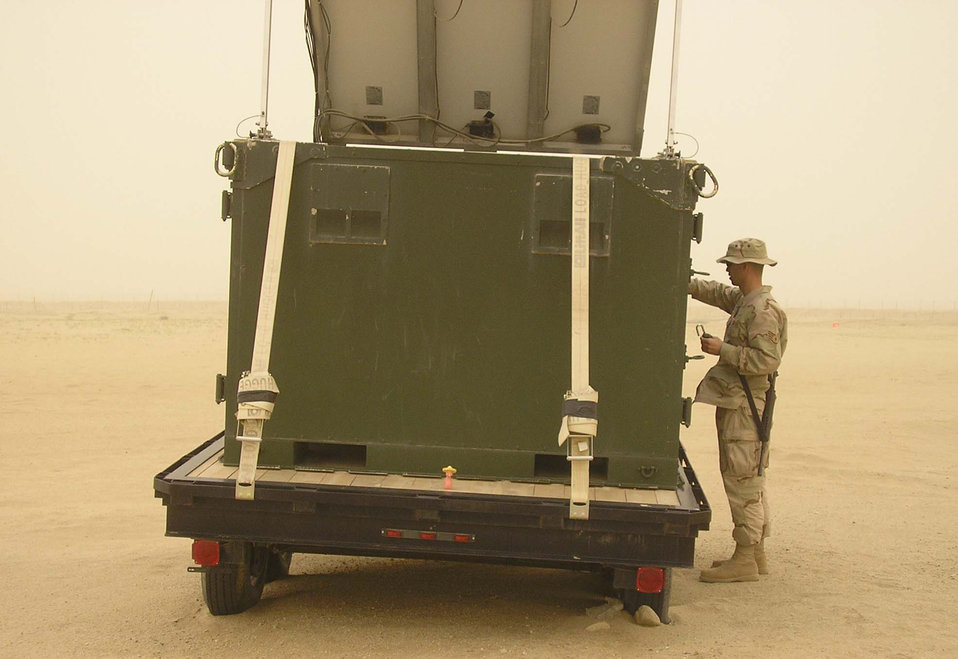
Radio team connects air to ground

BAGRAM AIR BASE, Afghanistan - Staff Sgt. Cody Williams, 455th Expeditionary Mission Support Squadron Joint Radio Relay team member, repairs a JR2 during a dust storm at a remote site in Afghanistan. The system has similar capabilities to the E-3 Sentry airborne warning and control system. Sergeant Williams, a ground radio communications craftsman by trade, is deployed from Royal Air Forces Lakenheath, England.